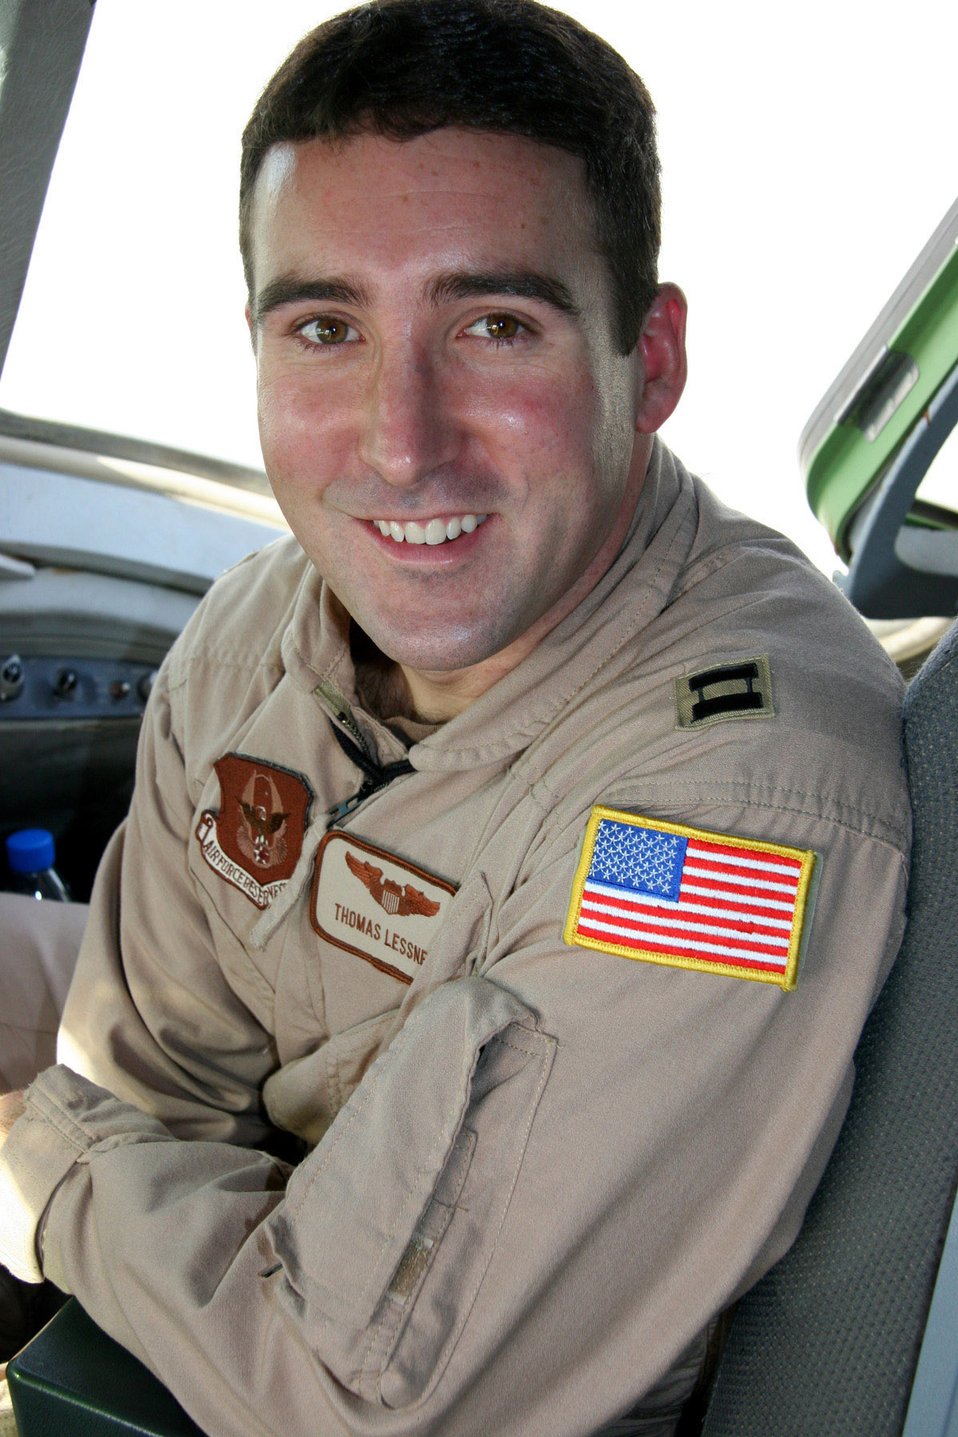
Captain 'walks the line' for fellow Airmen

Capt. Thomas Lessner is pictured in the cockpit of his MH-53 Pavelow helicopter following sharing his story of 'walking the line' Sept. 21 while deployed to the 908th Expeditionary Air Refueling Wing in Southwest Asia. Captain Lessner is a Reserve KC-10 pilot at Travis Air Force Base, Calif.